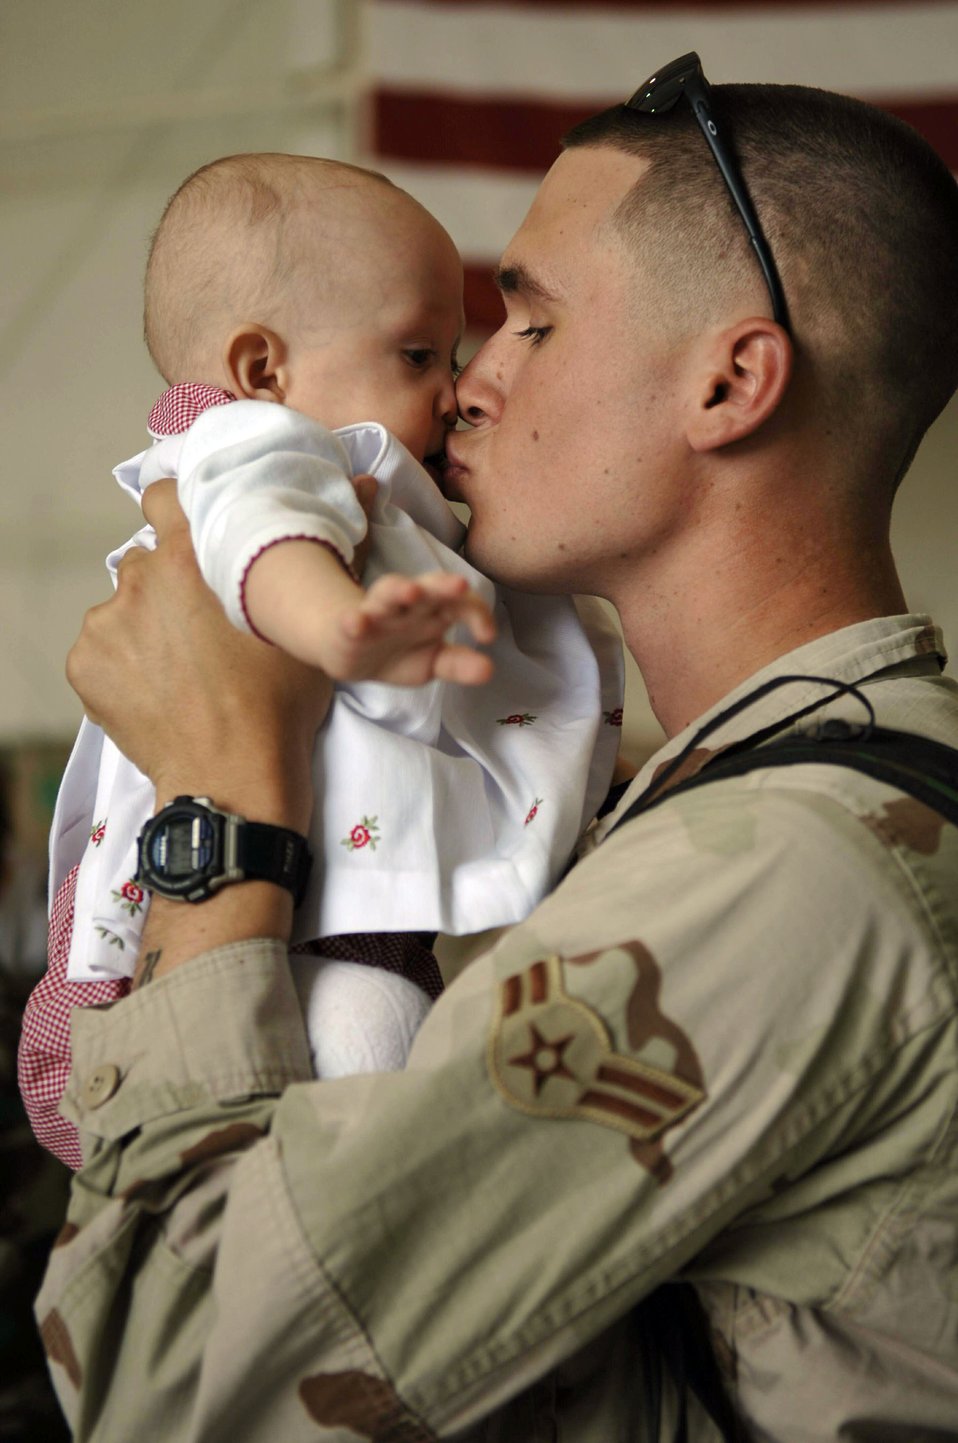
Welcome back to Arizona

Airman 1st Class Daniel Wurdinger kisses his daughter, De`nae, as he returns to Davis-Monthan Air Force Base, Ariz., Friday, March 17, 2006, from his deployment supporting Operation Iraqi Freedom. Airman Wurdinger is with the 355th Security Forces Squadron.